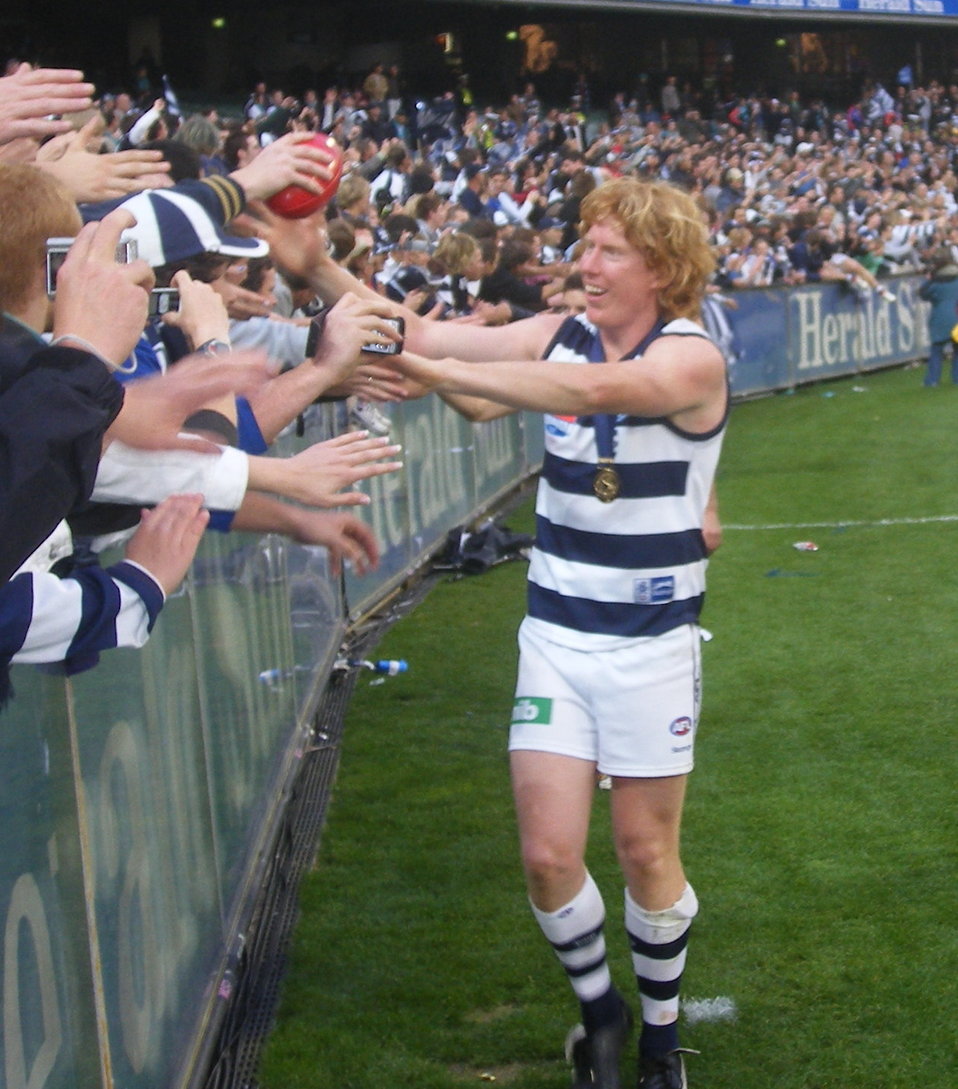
This is a picture of Cameron Ling which I took on the 29th of September at about 5.30 in the post match celebratory lap that Cameron and his side conducted.